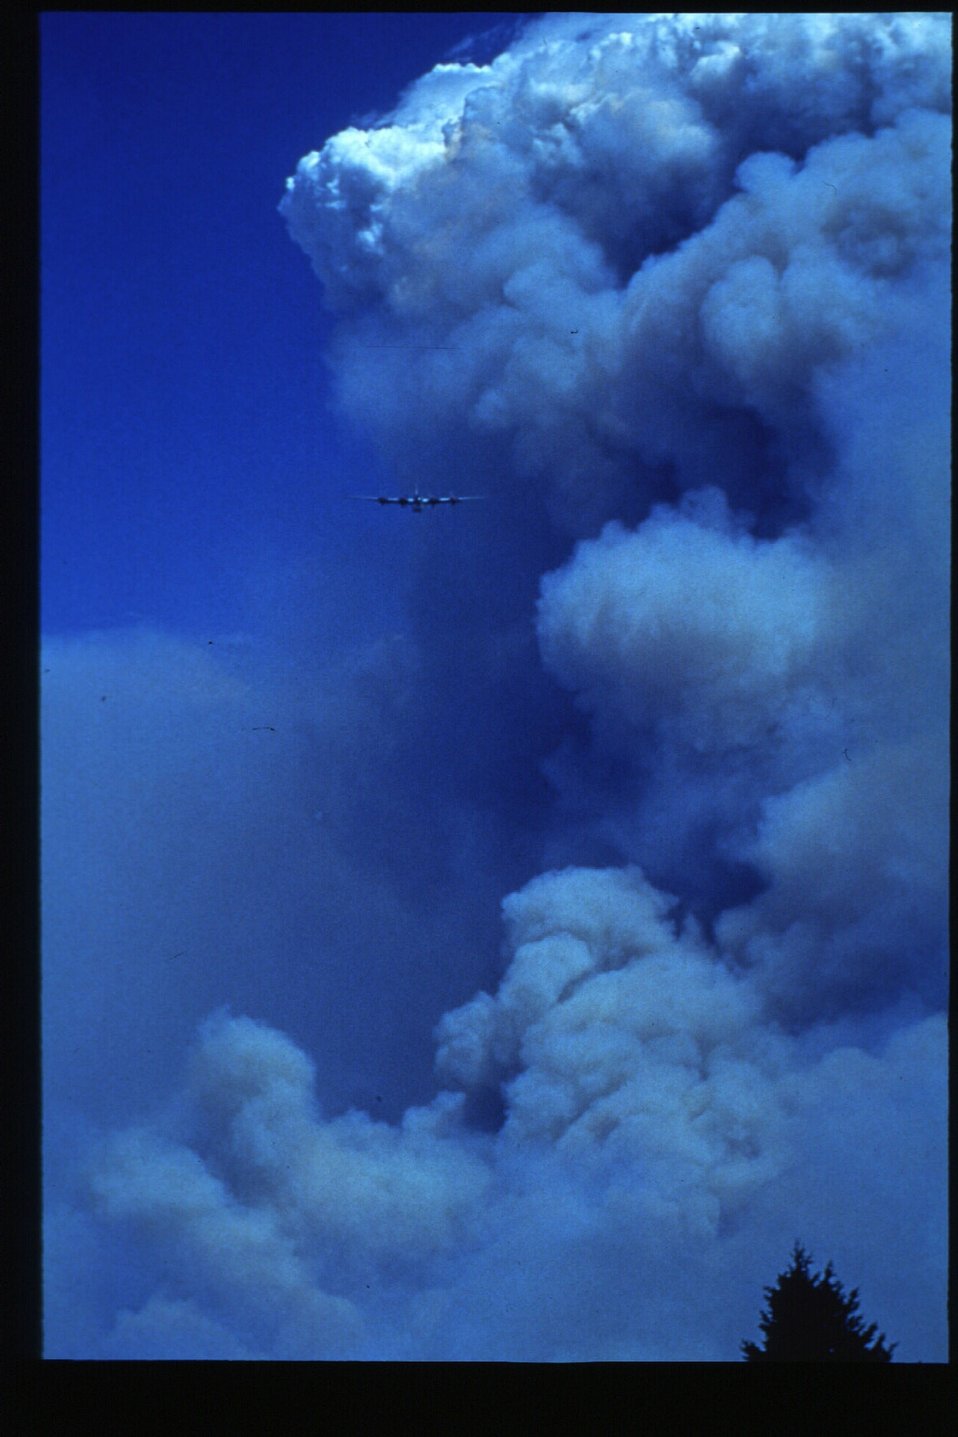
Boise Foothills Fire Danskin Mountains and South Fork of Boise River Smoke Four River Field Office LSRD Lower Snake River District